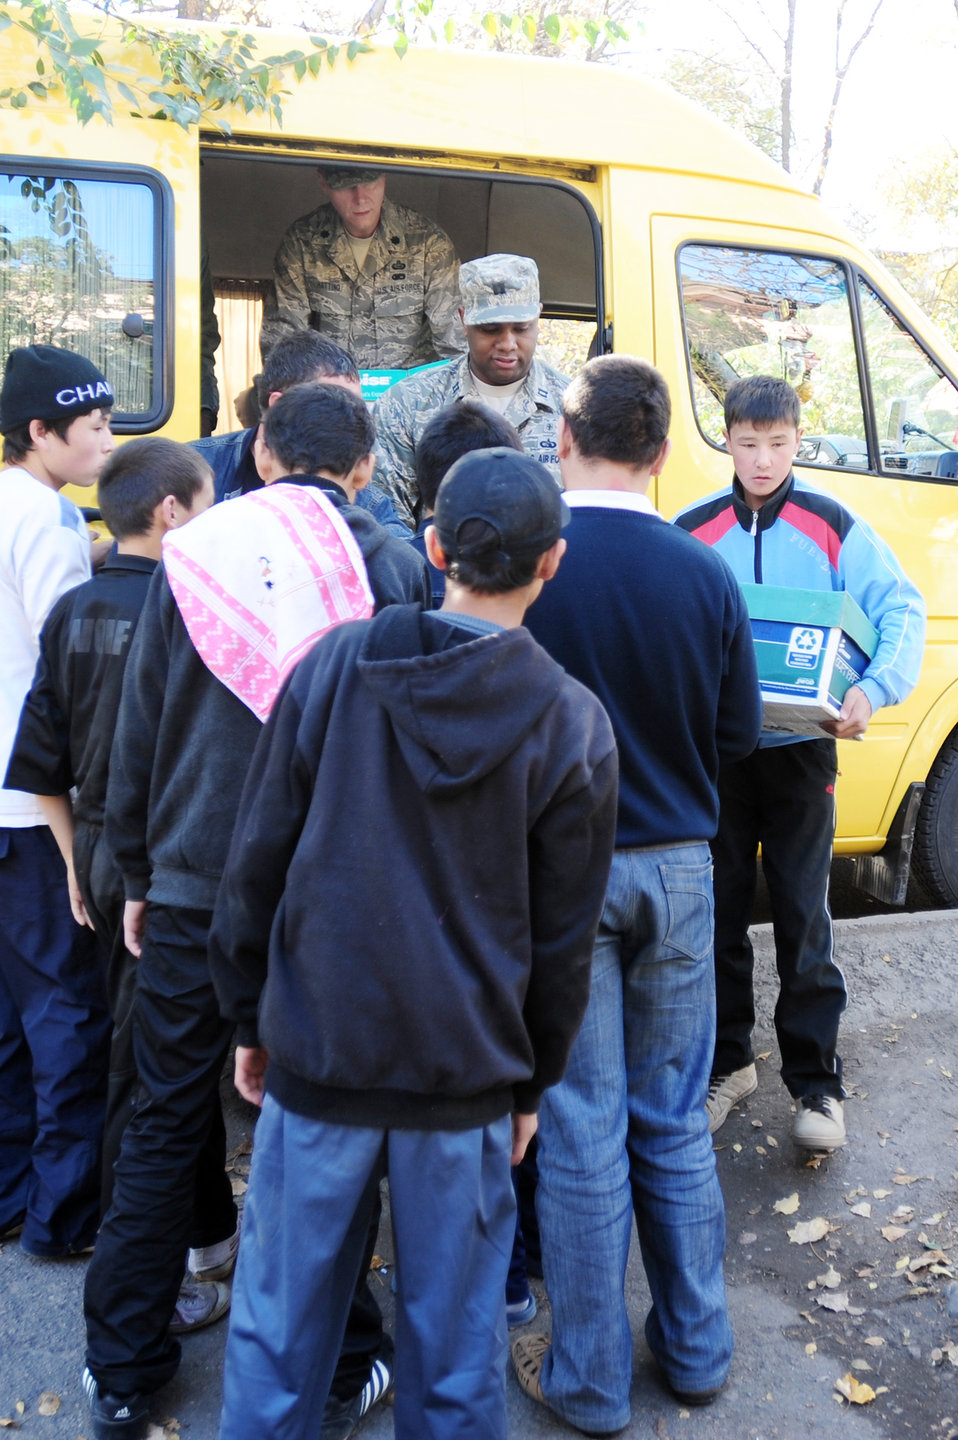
Manas Airmen donate necessities to hospital, school in Kyrgyzstan

Lt. Col. Patrick Hatting and Capt. Ronnie Mack deliver boxes of paper to the Bishkek School for the Deaf Oct. 31, 2009, Bishkek, Kyrgyzstan. Airmen from the Transit Center at Manas donated more than 20 boxes of paper that will greatly benefit the school for use of visual aides. Colonel Hatting is the 376th Air Expeditionary Wing director of staff, and Captain Mack is a 376th Expeditionary Medical Group administrator.